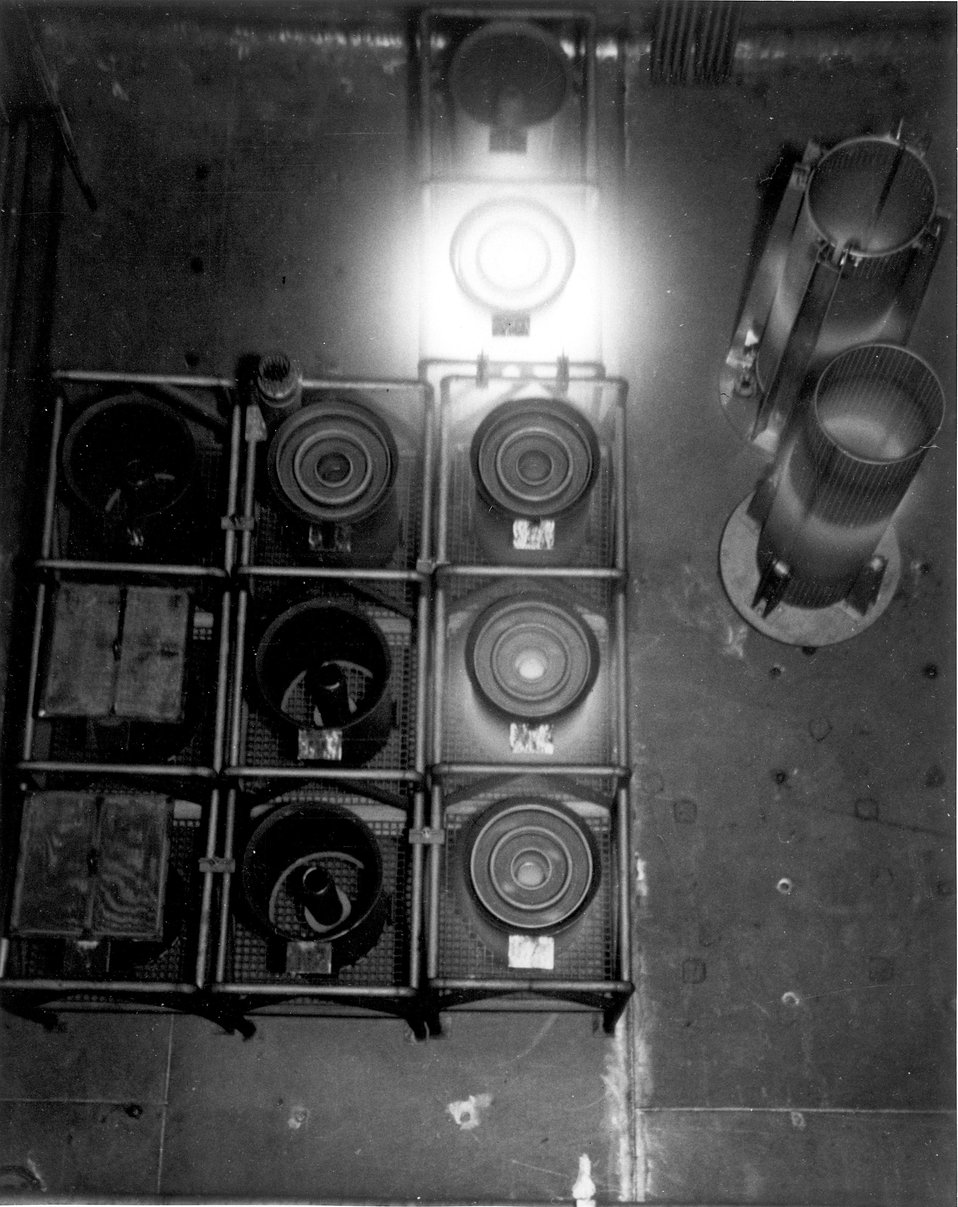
The High Flux Isotope Reactor reached full design power of 100,000 KW on September 9, 1966. c. 1967